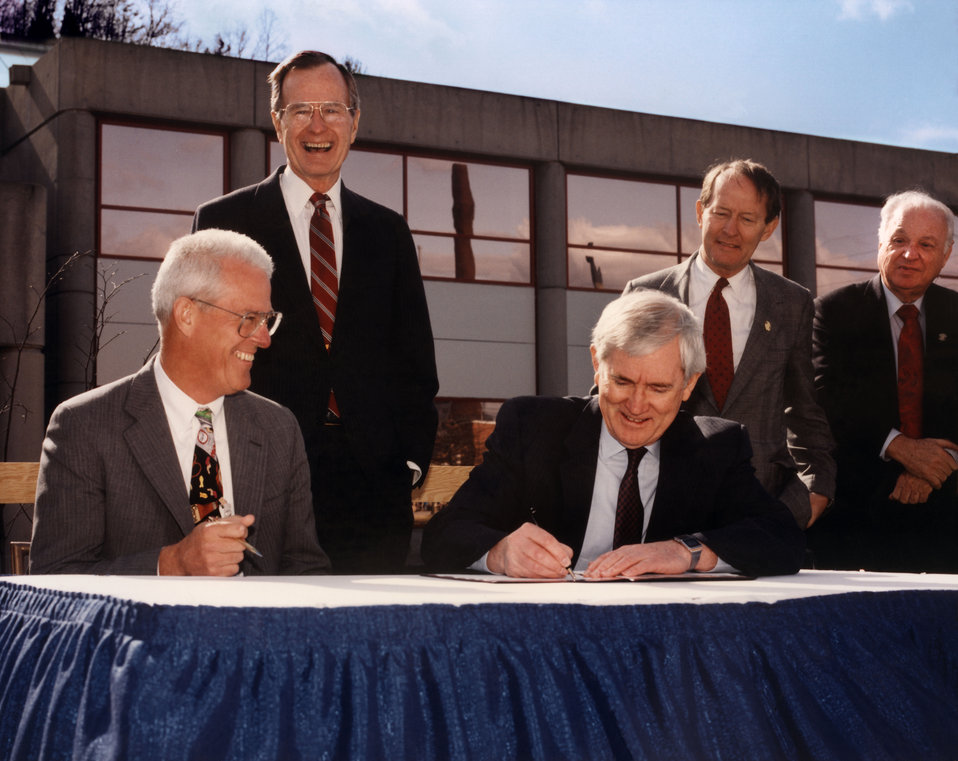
Joe Coors Jr., President George Bush Sr, Alvin Trivelpiece, Lamar Alexander, and Jimmy Quillen Oak Ridge

92-132 DOE photo by Frank Hoffman

Joe Coors Jr., President George Bush Sr, Alvin Trivelpiece, Lamar Alexander, and Jimmy Quillen Oak Ridge Tennessee 2-19-1992